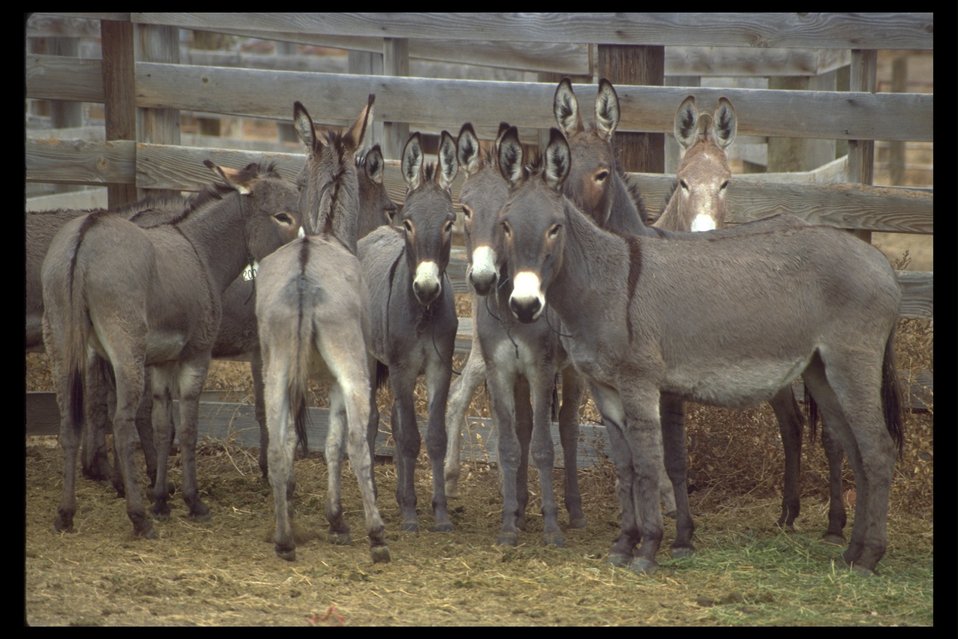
Wild burros from California desert awaiting adoption at Burns Wild Horse Corrals.